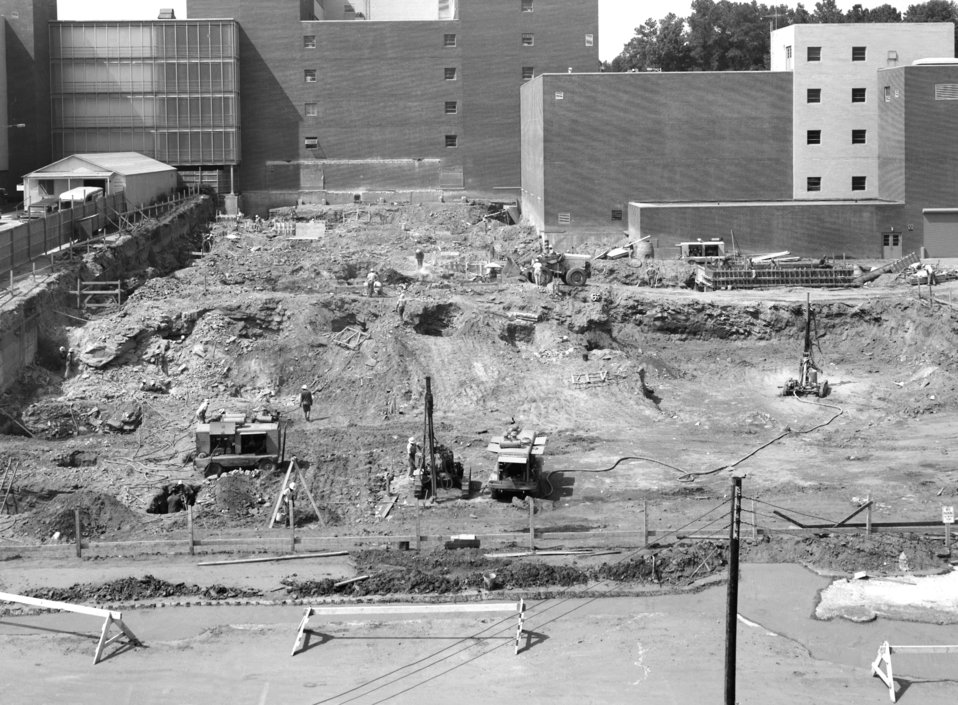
Lab additions E & D under construction at the Roybal Campus, Clifton Road, in 1964 (looking northeast).